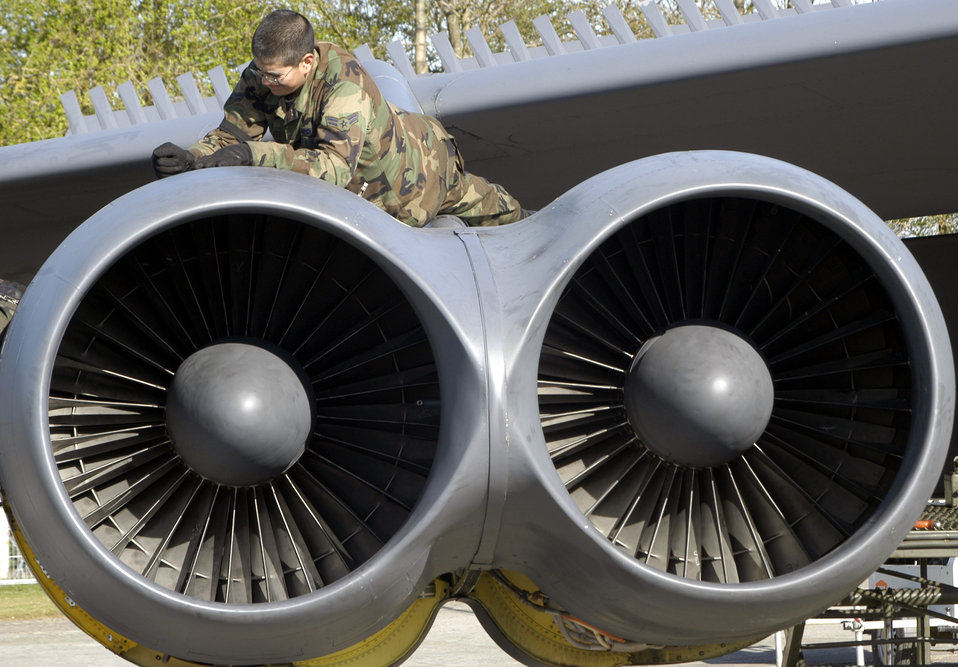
Engine work

OPERATION IRAQI FREEDOM -- Airman 1st Class Efren Molinar twists a screw out of a B-52 Stratofortress engine cowling April 7 at a forward-deployed location. Molinar was one of three crew chiefs disassembling the Buff to be washed that day, part of the start of a